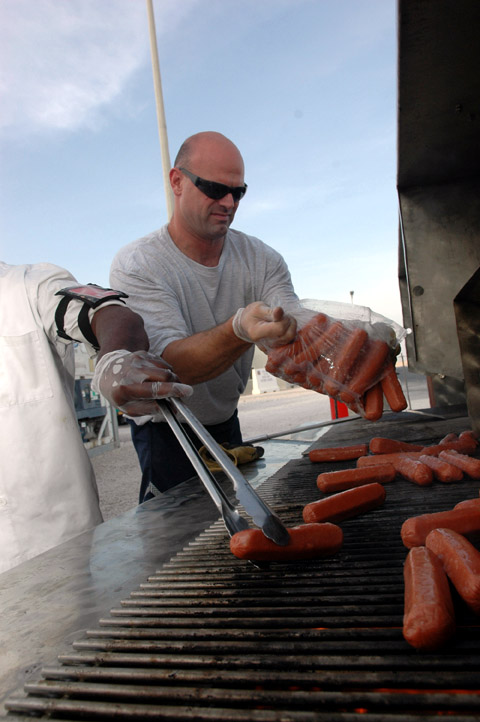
Expeditionary Wing celebrates Independence Day

Staff Sgt. John Cooper cooks hot dogs for a Fourth of July celebration at a deployed location in Southwest Asia. Sergeant Cooper is assigned to the 379th Expeditionary Services Squadron.